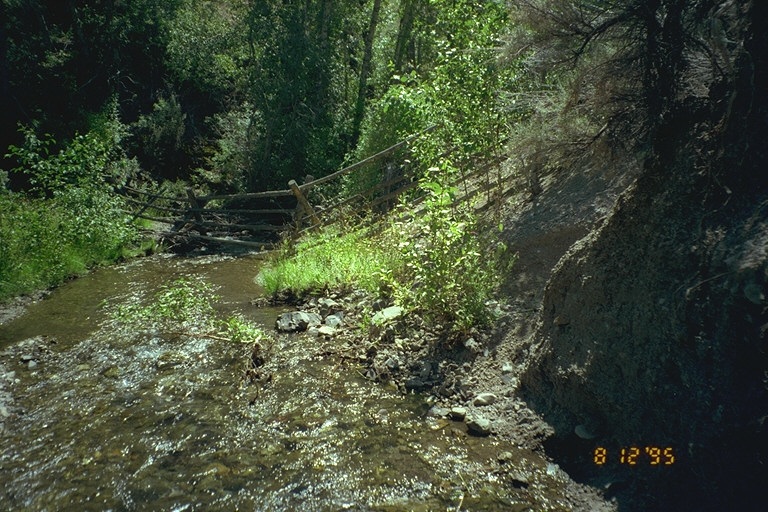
Riparian area Public Lands Salmon Field Office UCSC Upper Columbia Salmon Clearwater District